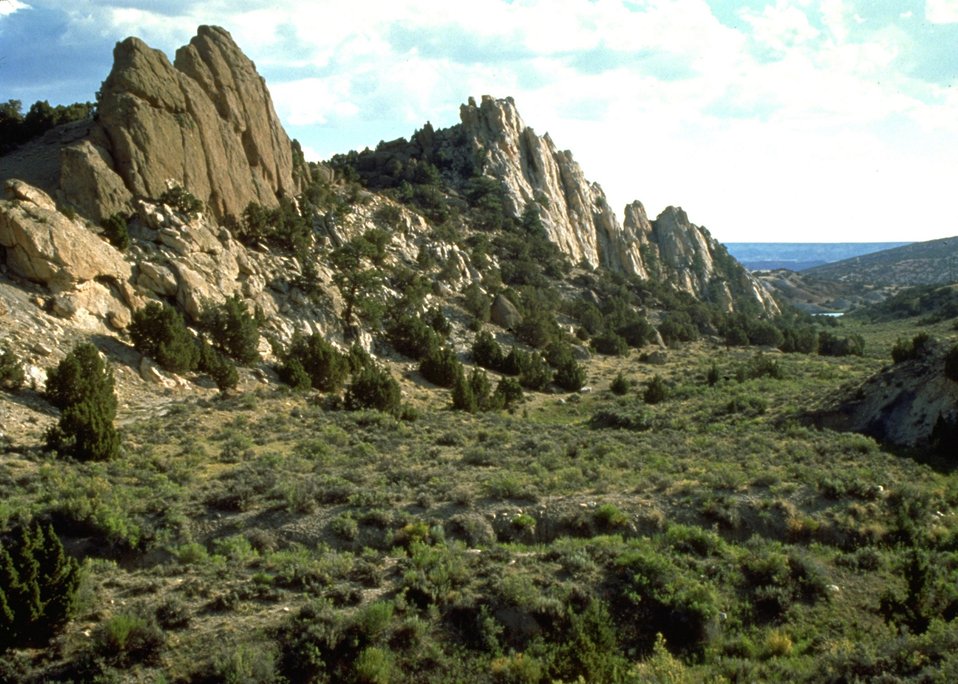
Scenic rock area.